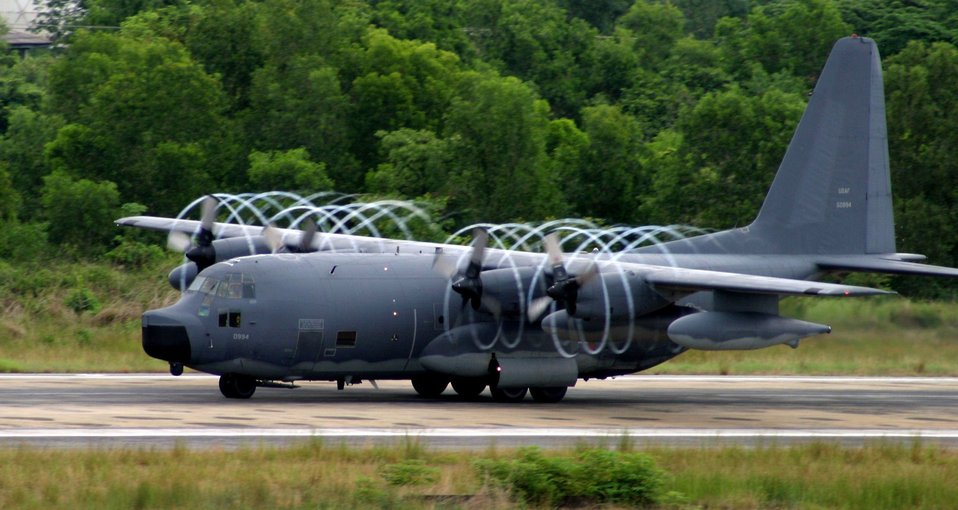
MC-130P Combat Shadow

An MC-130P Combat Shadow from the 17th Special Operations Squadron at Kadena Air Base, Japan, begins its takeoff roll on the runway in 2003 at Udon Thani, Thailand.